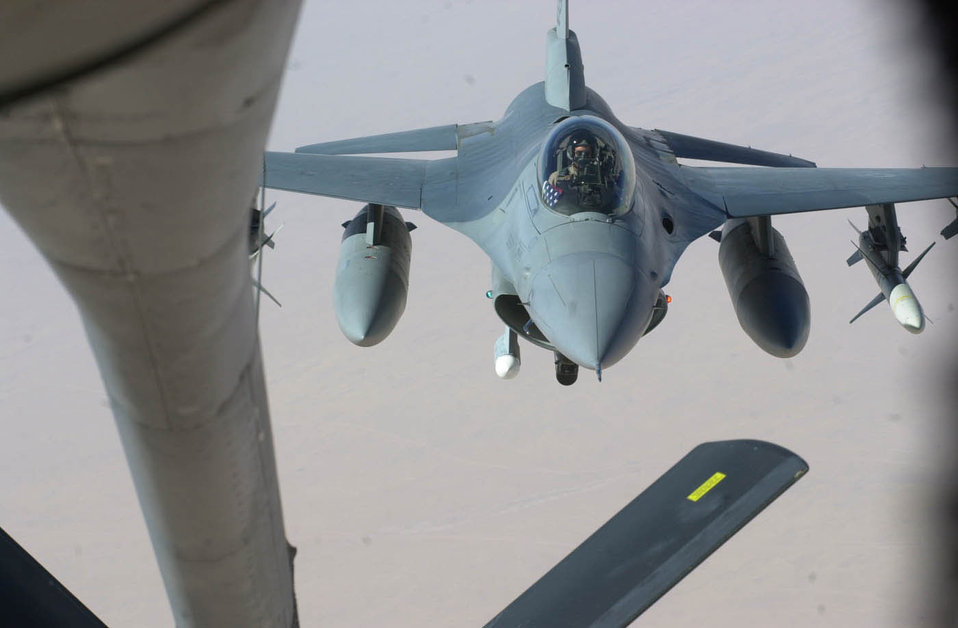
Refueling run

OPERATION SOUTHERN WATCH -- An F-16CJ from Prince Sultan Air Base's 363rd Expeditionary Fighter Wing approaches a KC-135 Stratotanker to refuel over Southwest Asia.